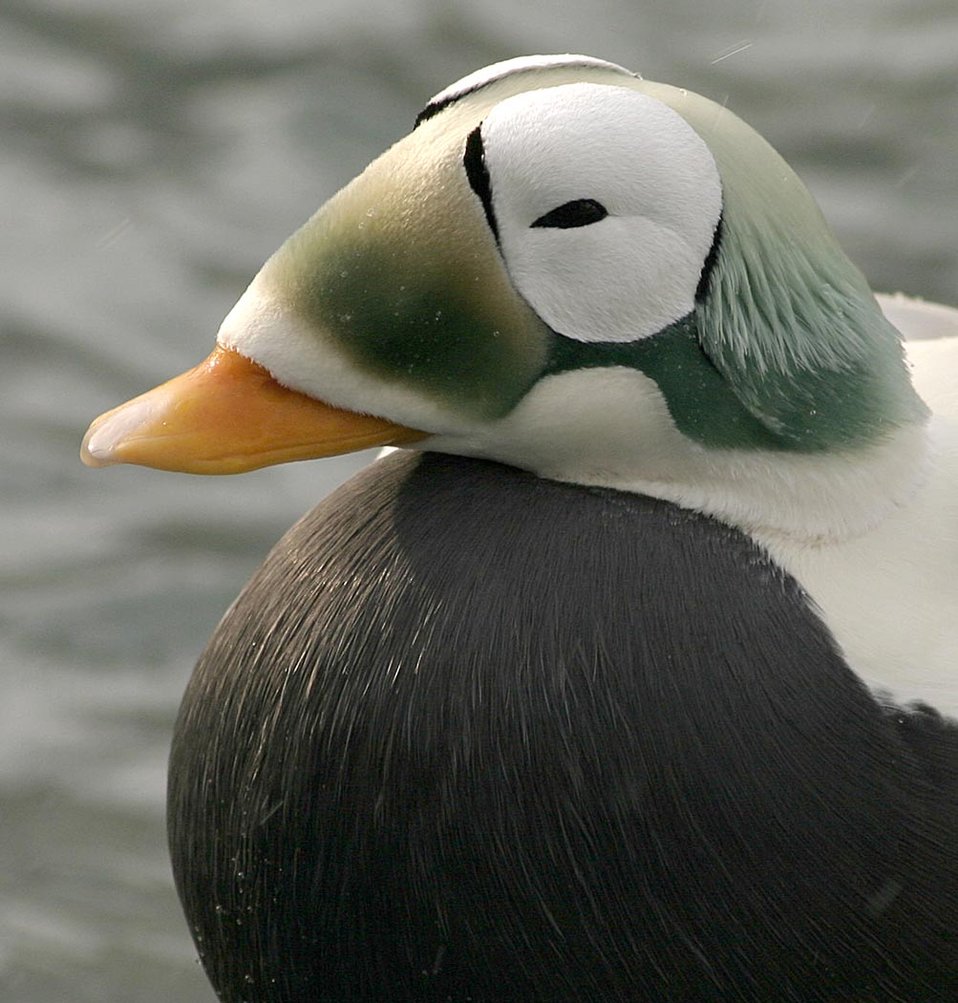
Threatened spectacled eider male (Somateria fischeri), Alaska SeaLife Center, Seward, Alaska